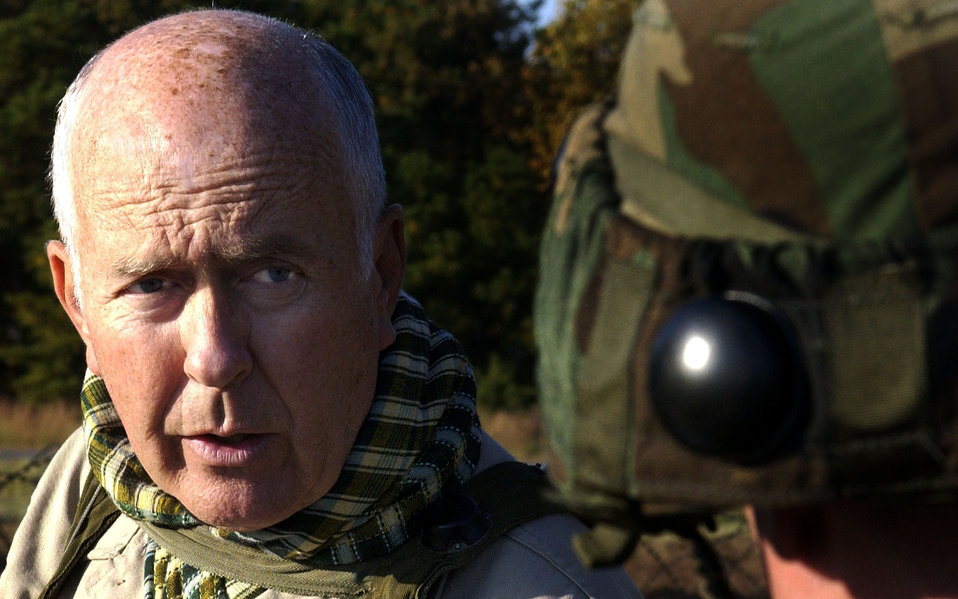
Playing the part

NAVAL AIR ENGINEERING STATION LAKEHURST, N.J. -- A role-playing town constable from the 421st Training Squadron at Fort Dix, N.J., talks to a participant as part of an Eagle Flag scenario here. Eagle Flag is an Air Force-level expeditionary combat-support exercise conducted by the 421st TRS. The exercise trains people to open and establish an air base at any type of forward operation.